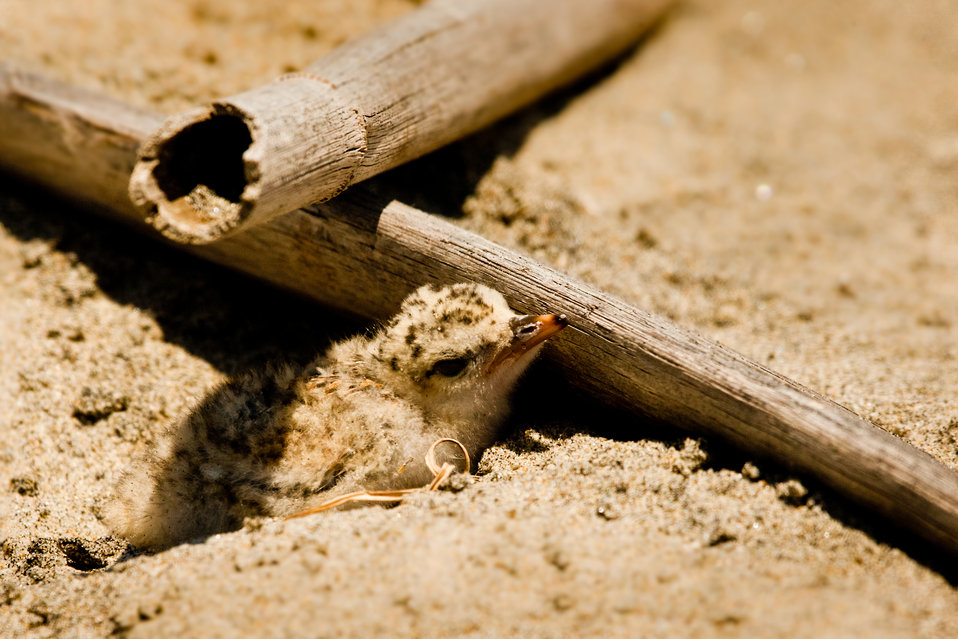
California Least tern chick takes shelter

It's a hard life for a little chick. It is very tiring to run on top of the sand, from plant to stick in order to seek shelter from predators. Most of the time, the chicks depend on their amazing camouflage to evade predators such as the gull-billed tern.